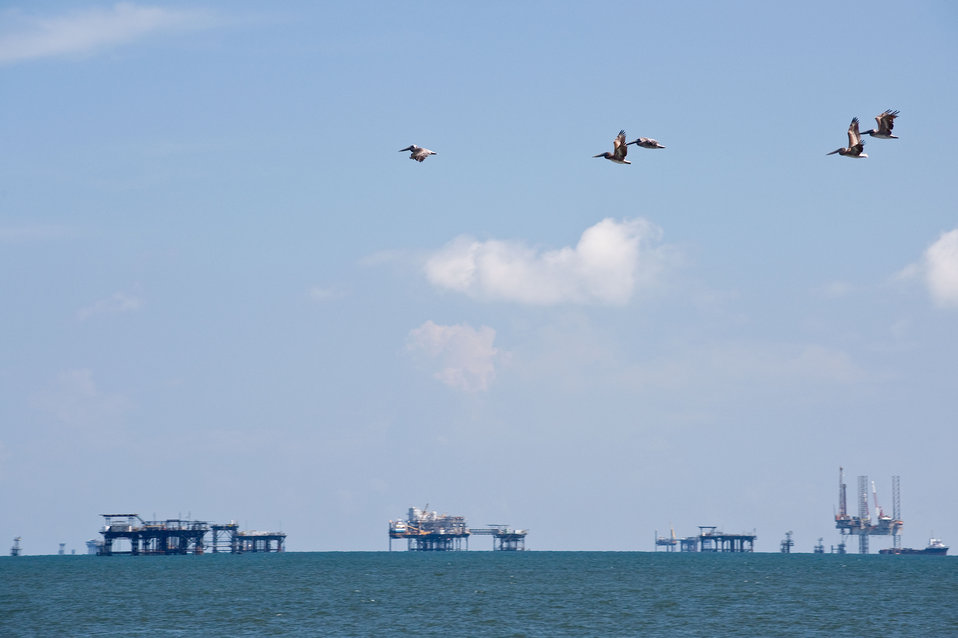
August 7, Nature and Industry in the Gulf

A large part of EPA's response to the BP oil spill was sampling for background environmental conditions in the Gulf.